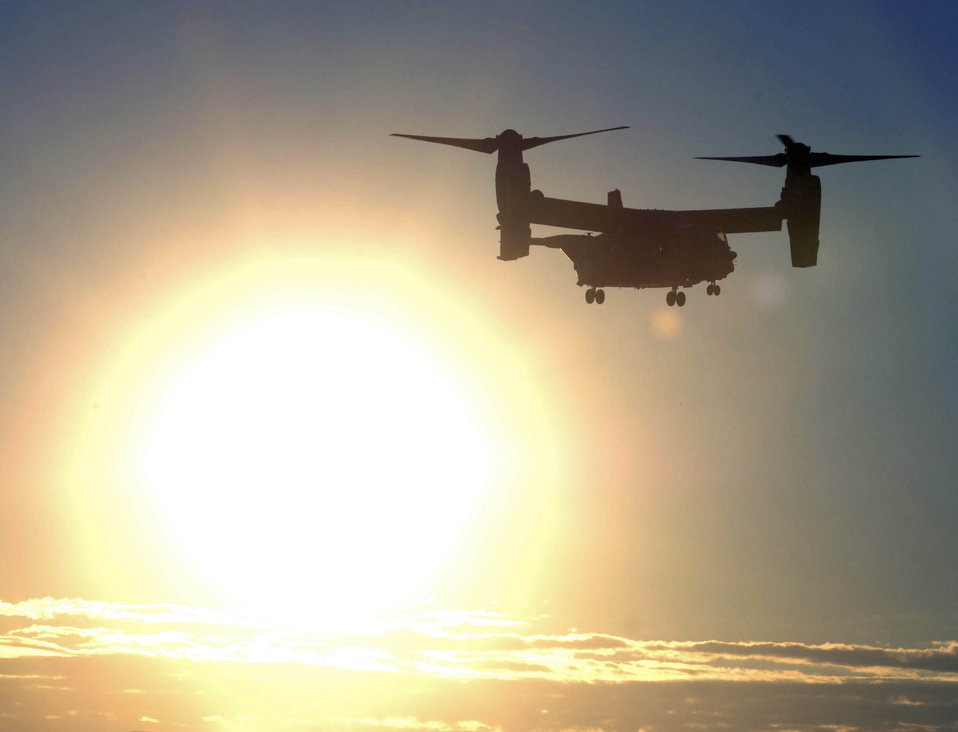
CV-22 Osprey flyover at Air Force Memorial

A CV-22 Osprey makes an early morning flight Oct. 13. The tiltrotor aircraft combines the vertical takeoff, hover and vertical landing qualities of a helicopter with the long-range, fuel efficiency and speed characteristics of a turboprop aircraft.